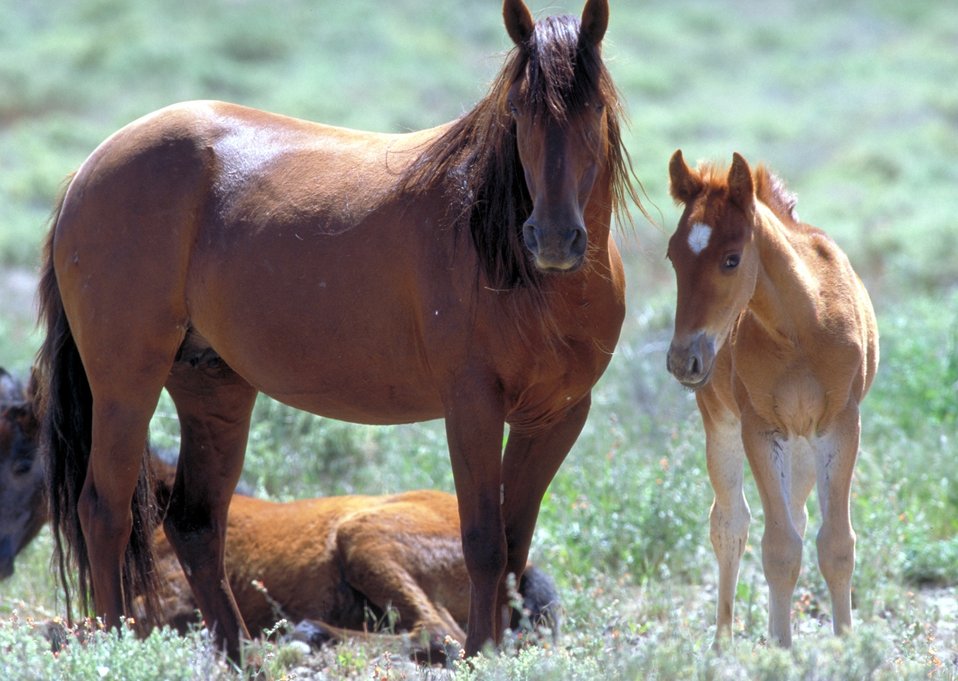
Onaqui Herd near Dugway, Utah.